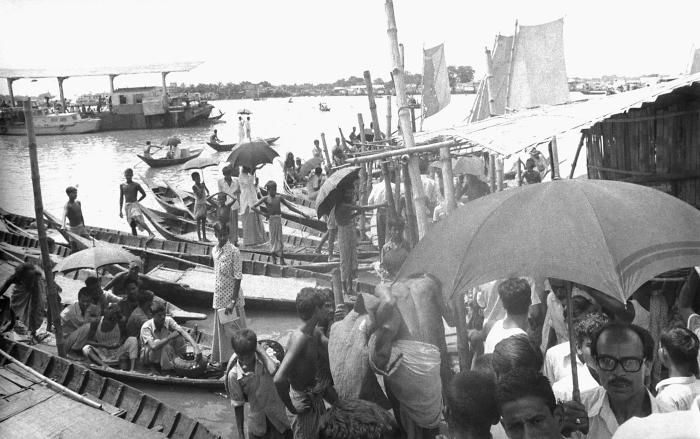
This photograph depicted a crowded town boat terminal where passengers were disembarking and boarding water craft, as they traveled from town to town. Note the various boats, some of which were powered by sail, others were propelled by a pole. This photograph provided by Dr. Stan Foster, and captured by Pierre Claquin, M.D., B.A.C., who at the time was a member of the World Health Organization's Smallpox Eradication Program. It was part of a series photographed by former E.I.S. officer, Stanley O. Foster M.D., M.P.H., and was one of a series entitled 'The Story of One Smallpox Jeep', which depicted the travails faced by the jeep, and its occupants of public health practitioners, as they road through the Bangladesh countryside in an attempt to eradicate smallpox from the country.